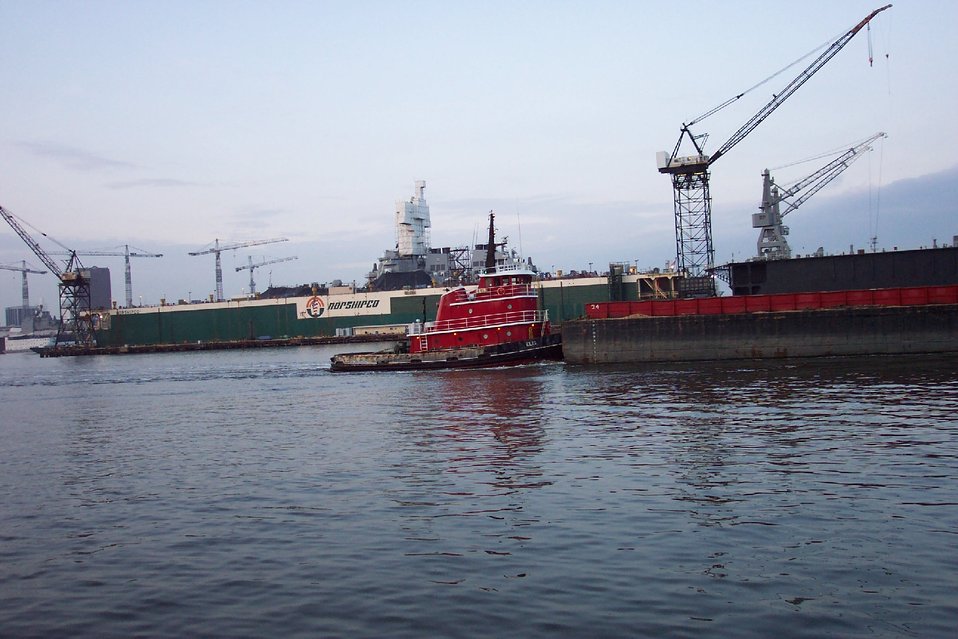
Tug pushing barge down the Elizabeth River with Navy ship in drydock.